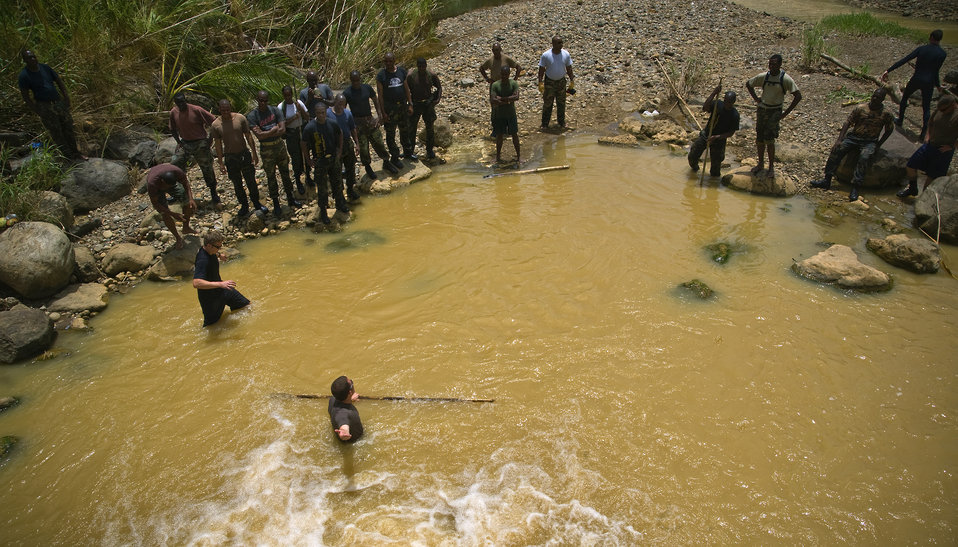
Operation Southern Partner

Capt. Travis Shepard (in water), an Air Force combat rescue officer, briefs members of the Royal St. Lucia Police Force's Special Service Unit about swift-water rescue procedures June 5 during Operation Southern Partner at La Toc, St. Lucia. Operation Southern Partner is a long term commitment between U.S. and partner nations to share experiences, information, vital skills, tactics and techniques in preparation for future regional challenges that require cooperative solutions.